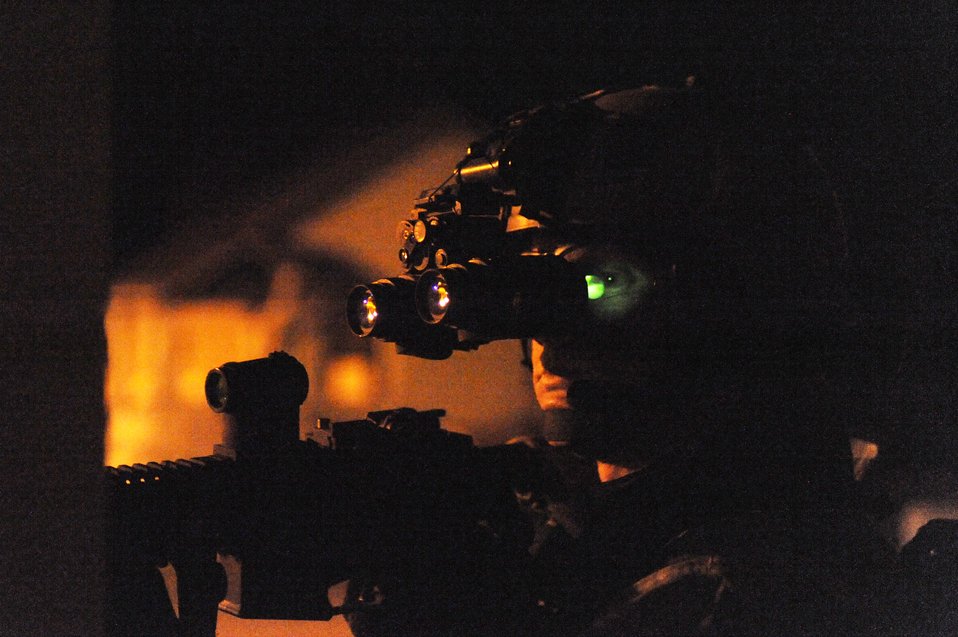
You can't hide

A pararescueman provides security during an Exercise Patriot Archangel tactical rescue scenario Oct. 24, 2009, at an undisclosed location in the U.S. The exercise hones Guardian Angel combat operations in